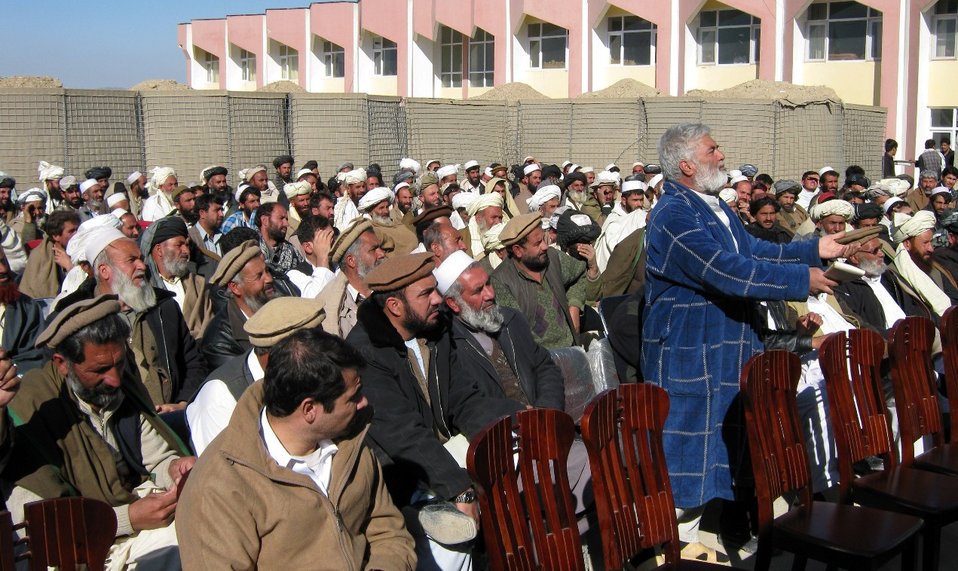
ASOP - District Community Council Formation Logar